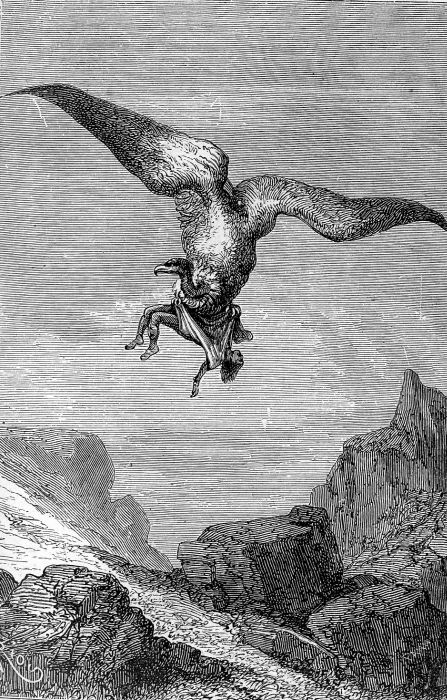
An ilustration from the novel 'In Search of the Castaways; or Captain Grant's Children' by Jules Verne drawn by Édouard Riou. Polski: Ilustracja powieści Juliusza Verne'a 'Dzieci kapitana Granta' autorstwa Édouarda Riou. Français : 'Les Enfants du capitaine Grant', Édouard Riou. Français : L’oiseau enlevait Robert par ses vêtements.